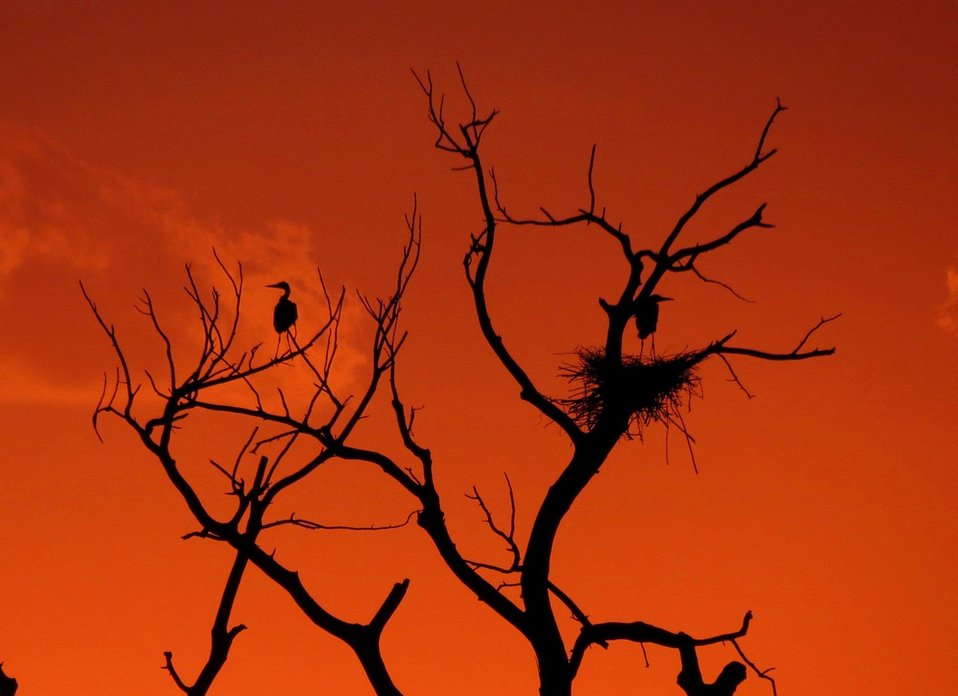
Great blue heron nest